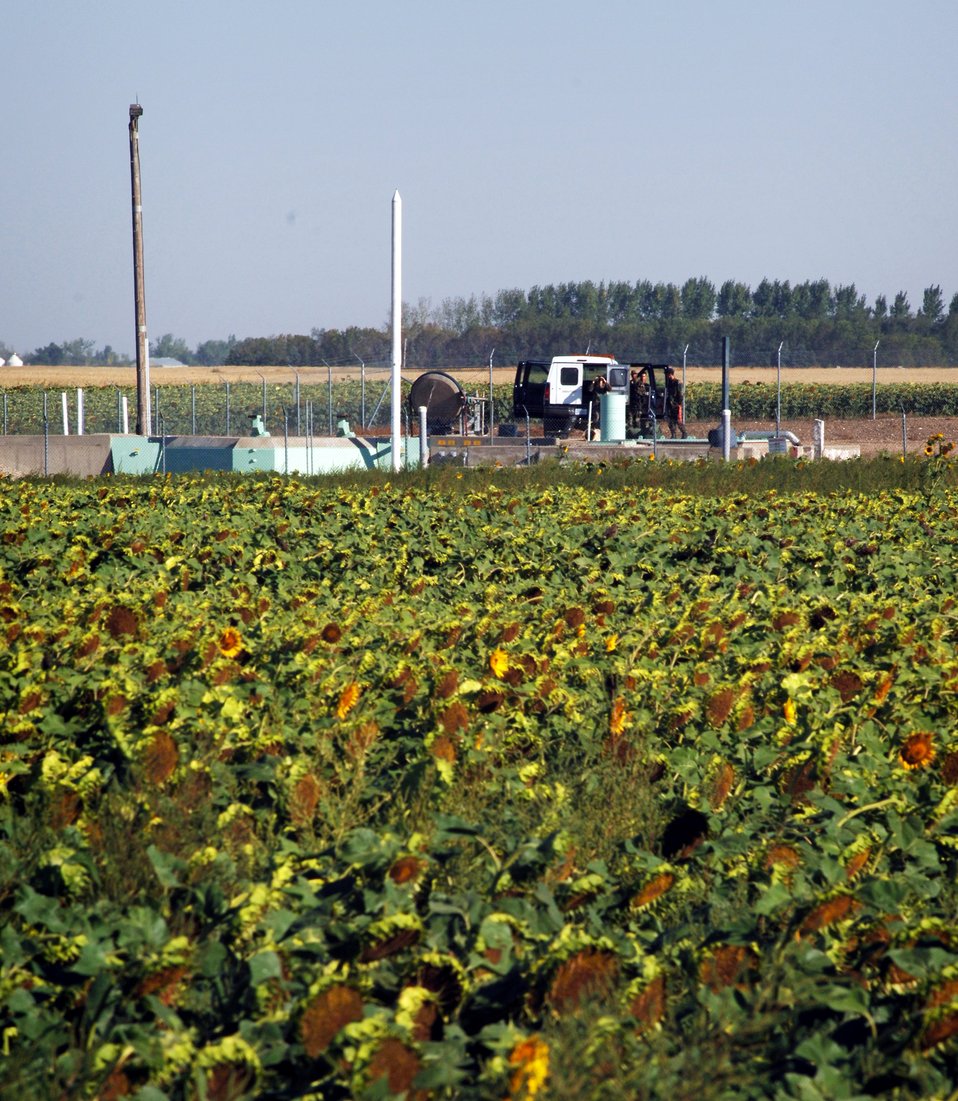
Working 'down in the hole'

Airmen from the 791st Missile Security Forces Squadron at Minot Air Force Base, N.D., stand near a Minuteman III intercontinental ballistic missile launch facility Aug. 25. Each launch facility contains one Minuteman III intercontinental ballistic missile. No one is required to be at the facility to launch the missile. It is signaled via several hardened and shielded cables from a missile alert facility 10 to 30 miles away.